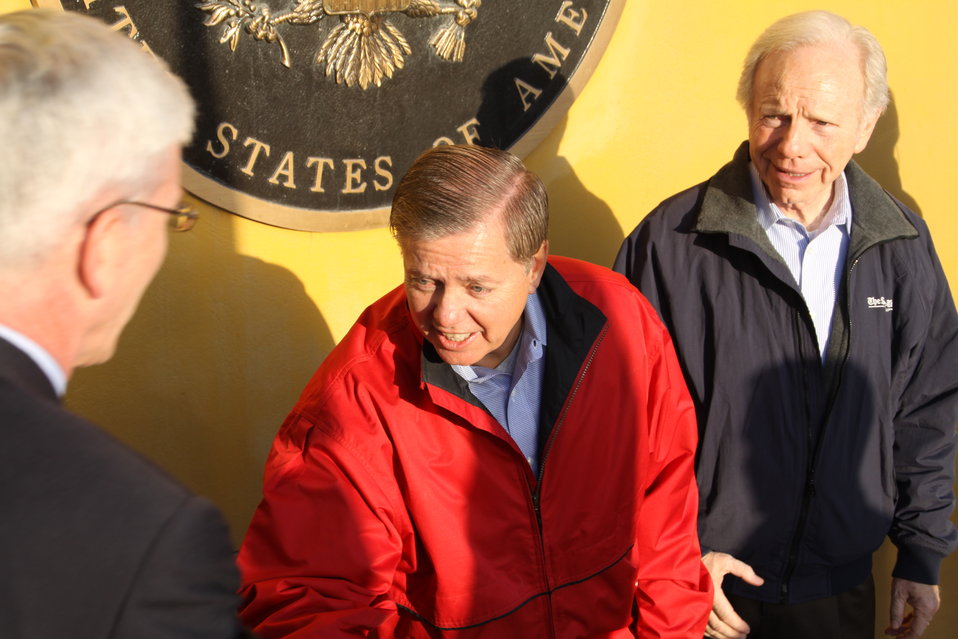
Senators Graham and Lieberman